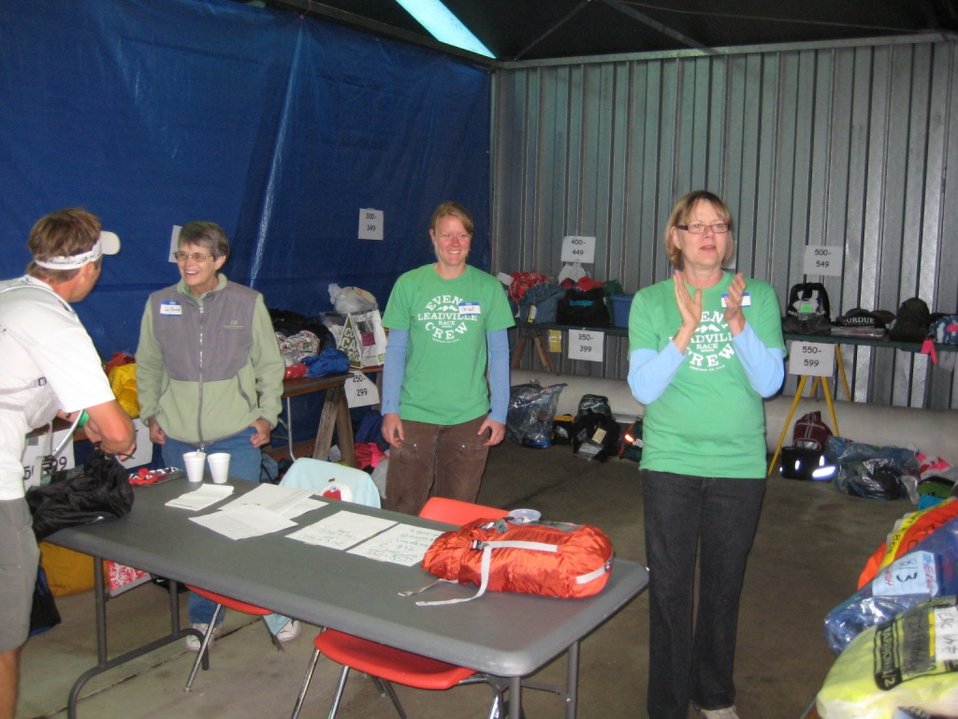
Drop bag station with volunteers

Drop bag station for runners located at Leadville National Fish Hatchery. Leadville NFH serves as an aid station for miles 24 and 76. Volunteers Joanne, Paige and Susan work the drop bag station for the Leadville Trail 100 race.